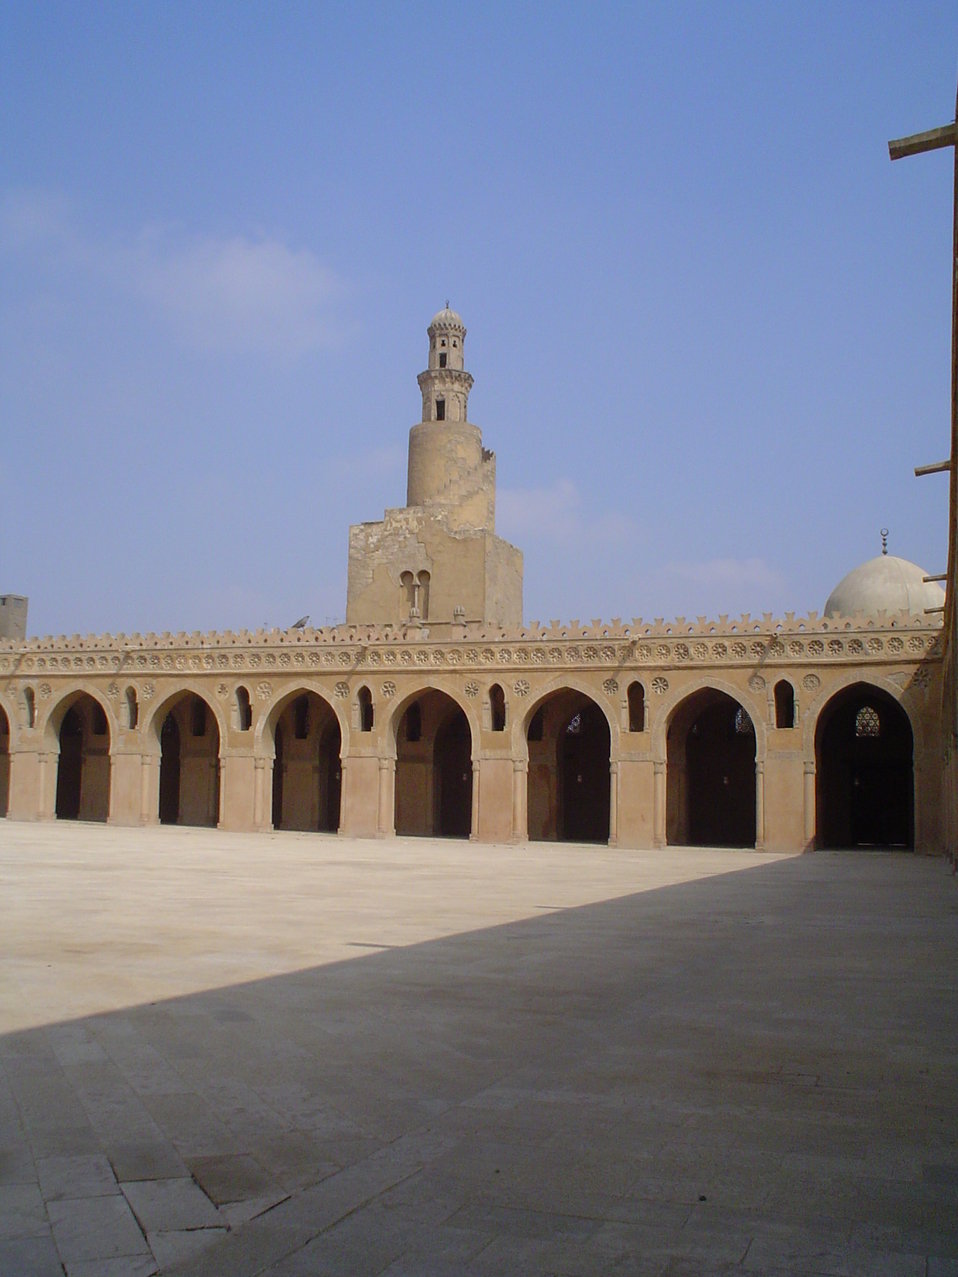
The Minaret of Ibn Tulun mosque in Cairo, Egypt.